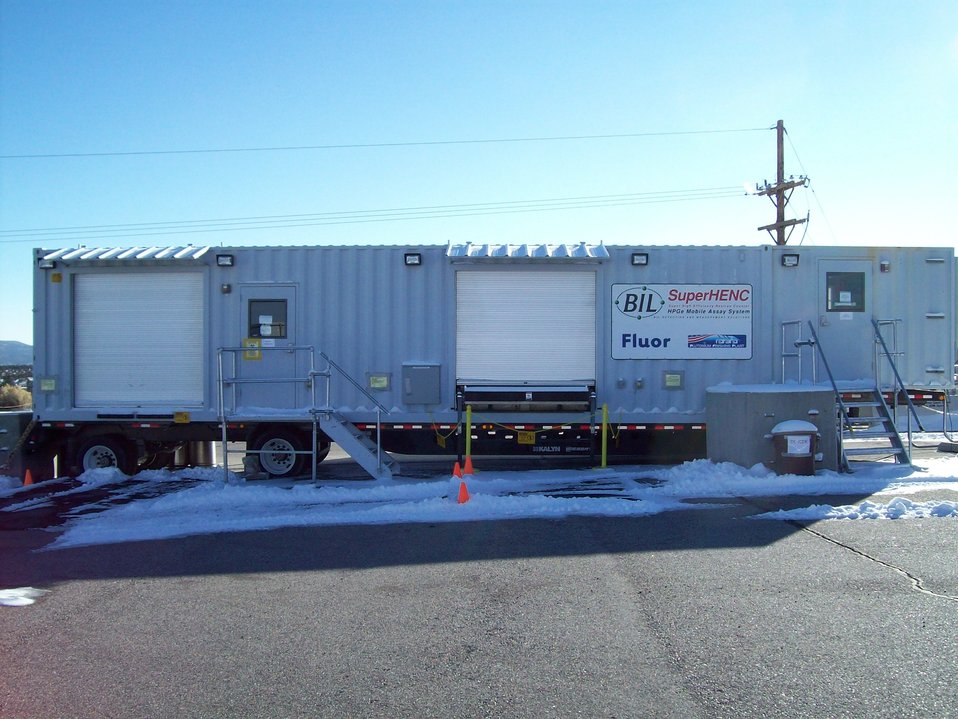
New equipment at LANL

On October 28, 2011, the Environmental Protection Agency approved the Department of Energy’s request to use new equipment at the Los Alamos National Laboratory (LANL) in Los Alamos, N.M. for examining transuranic (TRU) waste to ensure prohibited items such as aerosol containers are not in waste shipped to WIPP.

The new equipment is called a super high efficiency neutron counter (SuperHENC) and has higher fidelity to “x-ray” contact-handled TRU (CH-TRU) waste boxes. Like the Transportation Safety Administration screening for prohibited items on planes, EM screens for items that are not allowed in waste going to WIPP due to the potential hazards (physical, chemical, and nuclear characteristics) primarily associated with transporting the wastes to WIPP.

Prior to having the SuperHENC, waste packages were opened and sorted by hand to ensure no prohibited items were in the waste or waste containers. Now with SuperHENC fewer waste containers will need to be opened and sorted by hand, thereby reducing potential worker exposure and increasing the efficiency of the sorting processes.